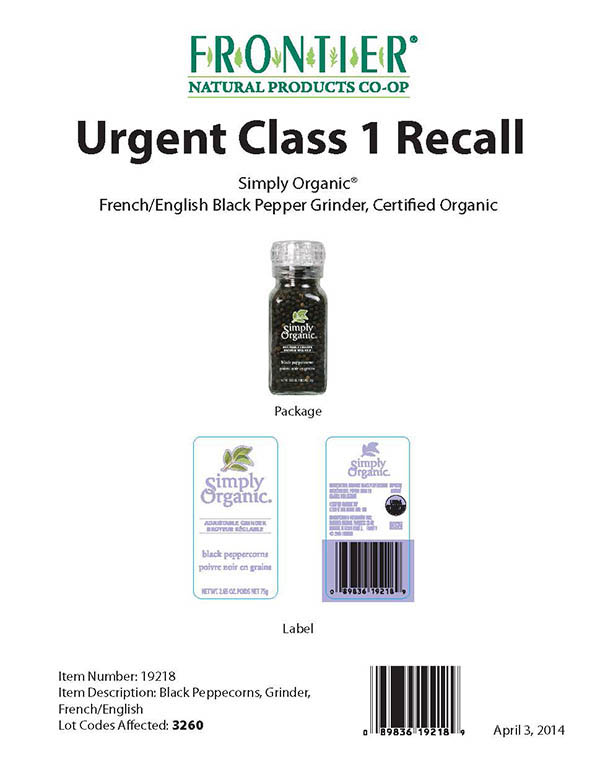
RECALLED – Organic Black Peppercorns

April 4, 2014 – Product Recall – Frontier Natural Products Co-op Initiates Voluntary Class 1 Recall Due to Possible Health Risk from Organic Black Peppercorns.